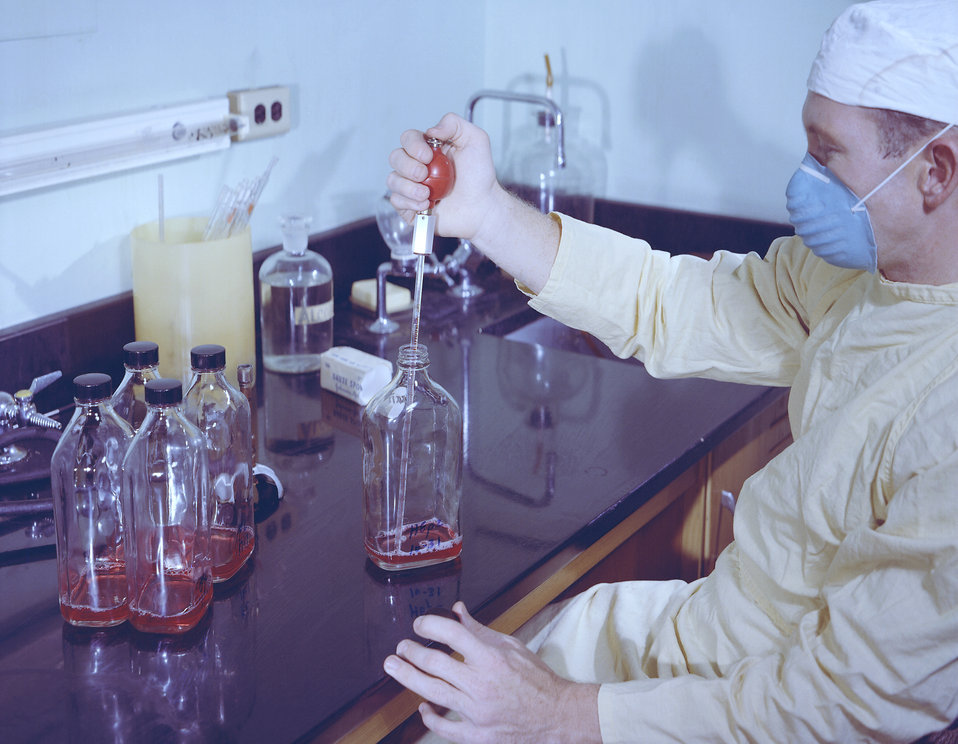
This historic image from 1963 depicts Centers for Disease Control laboratorian Mr. Reeves as he was harvesting antigen from a tissue culture bottle.